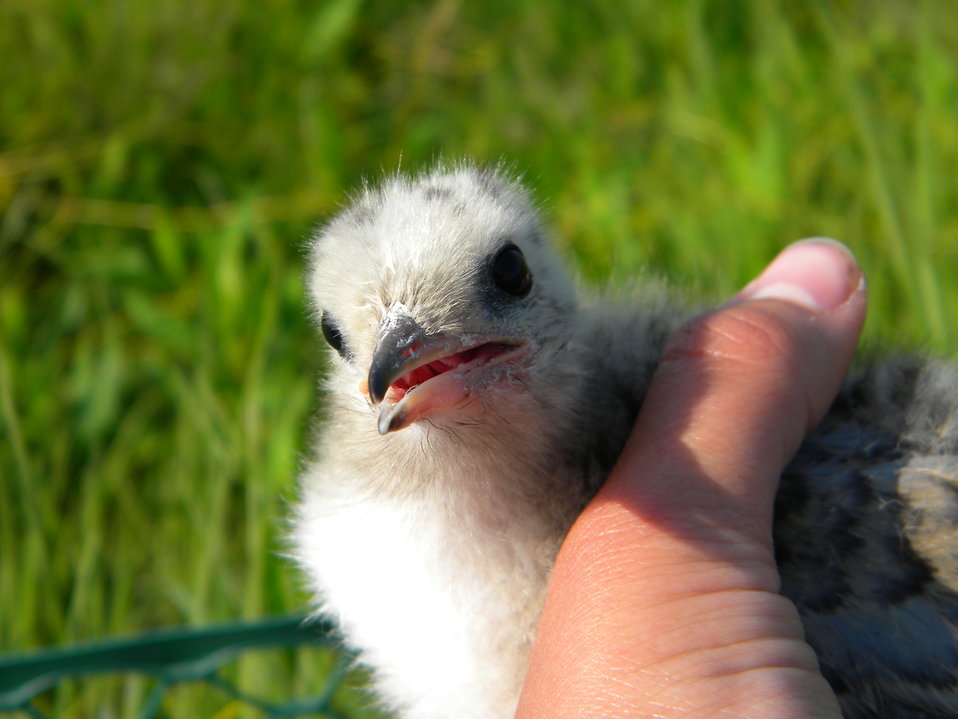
Clause the COTE

Petit Manan Island, Maine Coastal Islands NWR. Summer with the Seabirds blog: mainecoastalislands.wordpress.com/2010/08/01/terns/